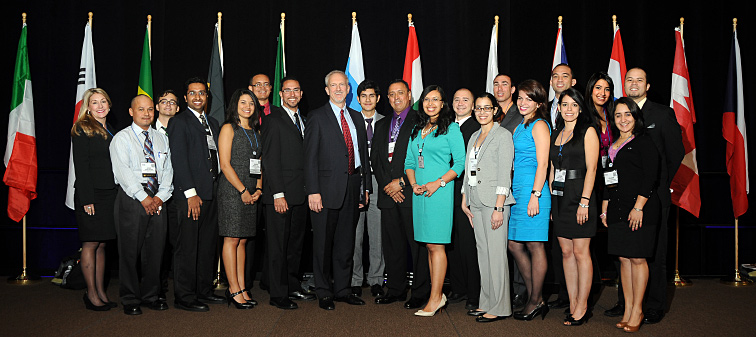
2012 Waste Management Symposia in Phoenix

Photo taken at the 2012 Waste Management Symposia in Phoenix, an international conference and trade show in radioactive material and nuclear waste management. DOE Senior Advisor for Environmental Management David Huizenga was a plenary speaker at the event.